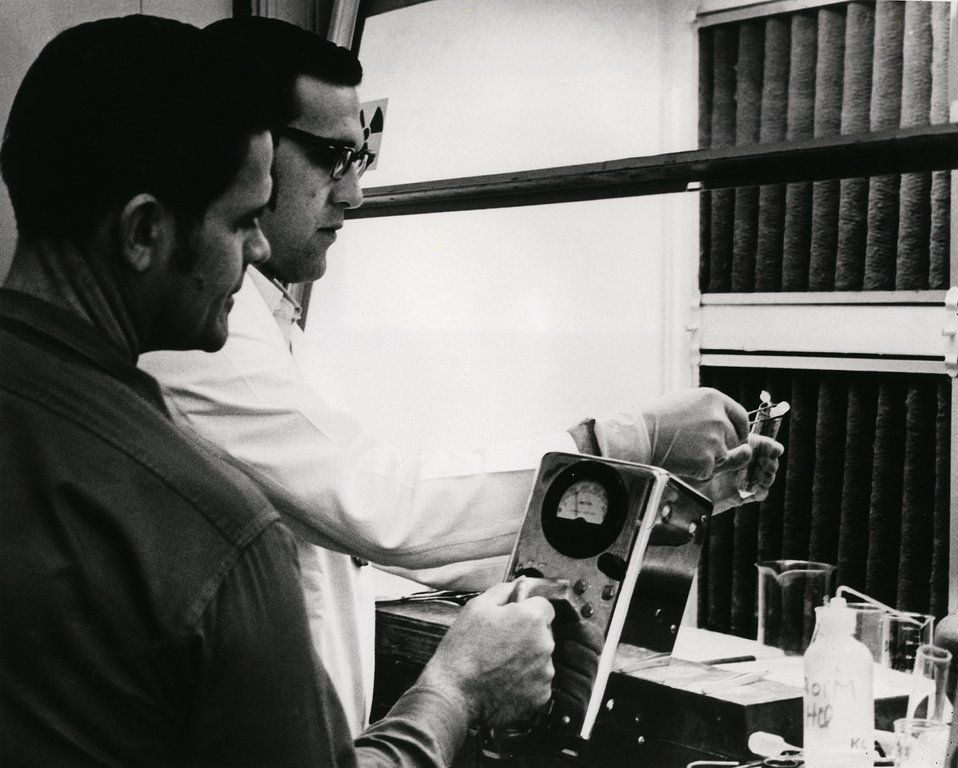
A scientist at Argonne prepares a fish specimen, which has been irradiated in a nuclear reactor, for analysis.
c.1970